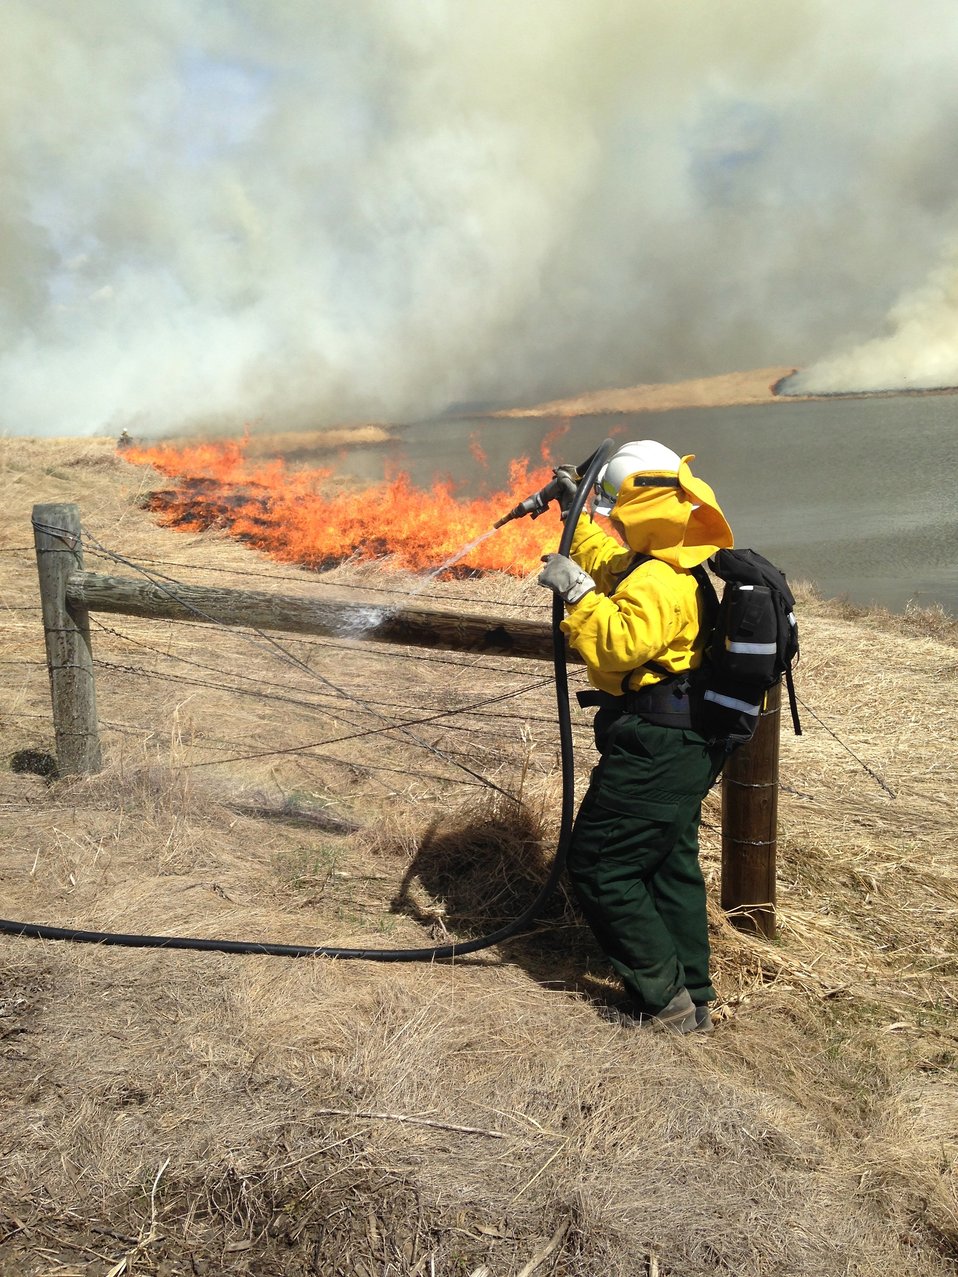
Hose It Down

Here, a firefighter hoses down an H-brace of a fence before fire is lit around it. On this day, firefighters successfully prescribed burned about 450 acres of native prairie habitat. Rather than staying black the rest of the year, this area can be expected to green up faster and lusher than it would have with the old, dead plant litter shading out the new sprouts.